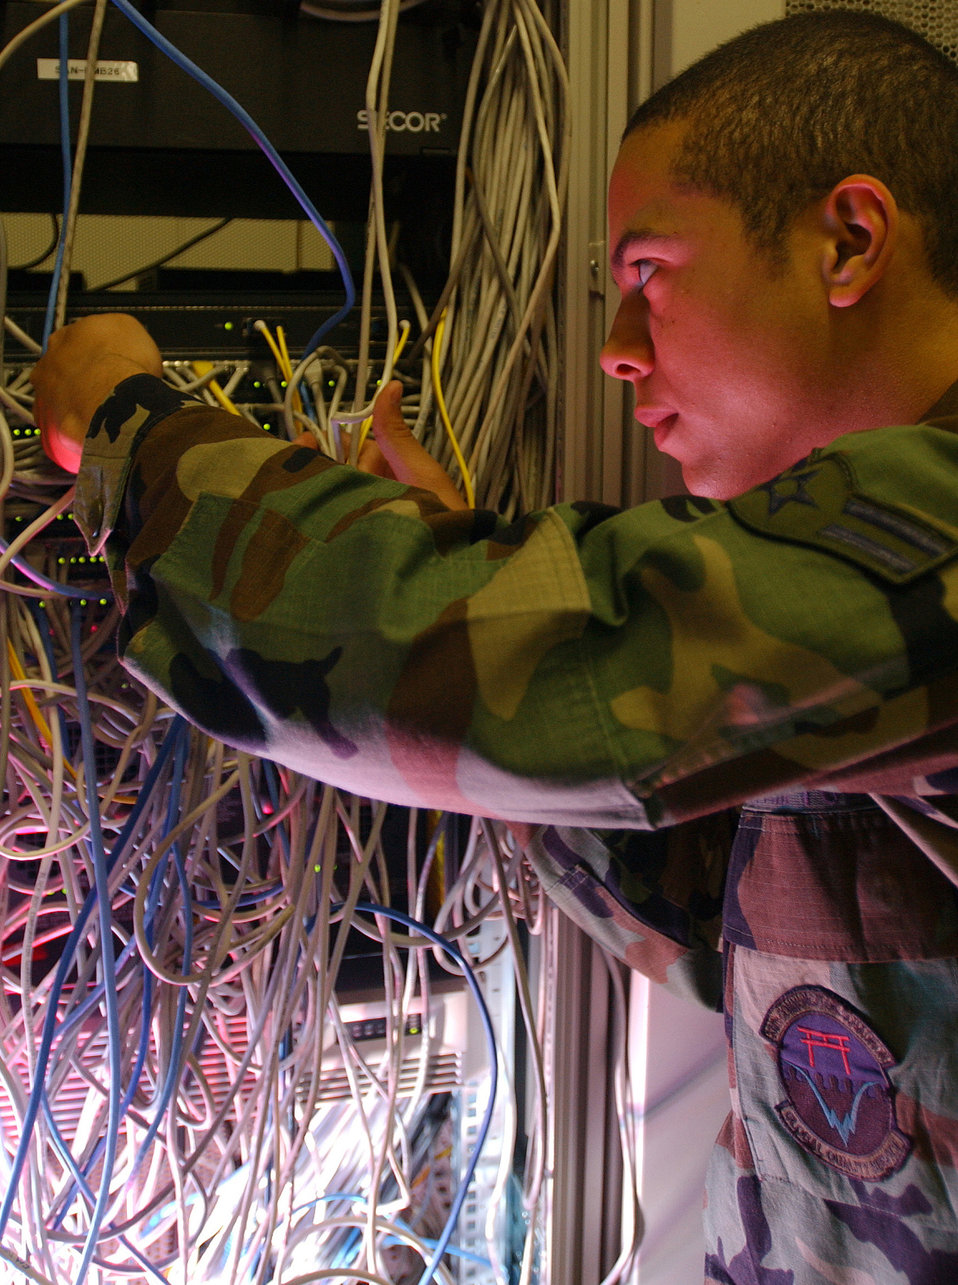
Getting wired

YOKOTA AIR BASE, Japan -- Airman 1st Class Lewis Jones checks a line of a storage area network system to ensure all connections are established here April 7. Airman Jones is a configuration management technician with the 374th Communications Squadron.